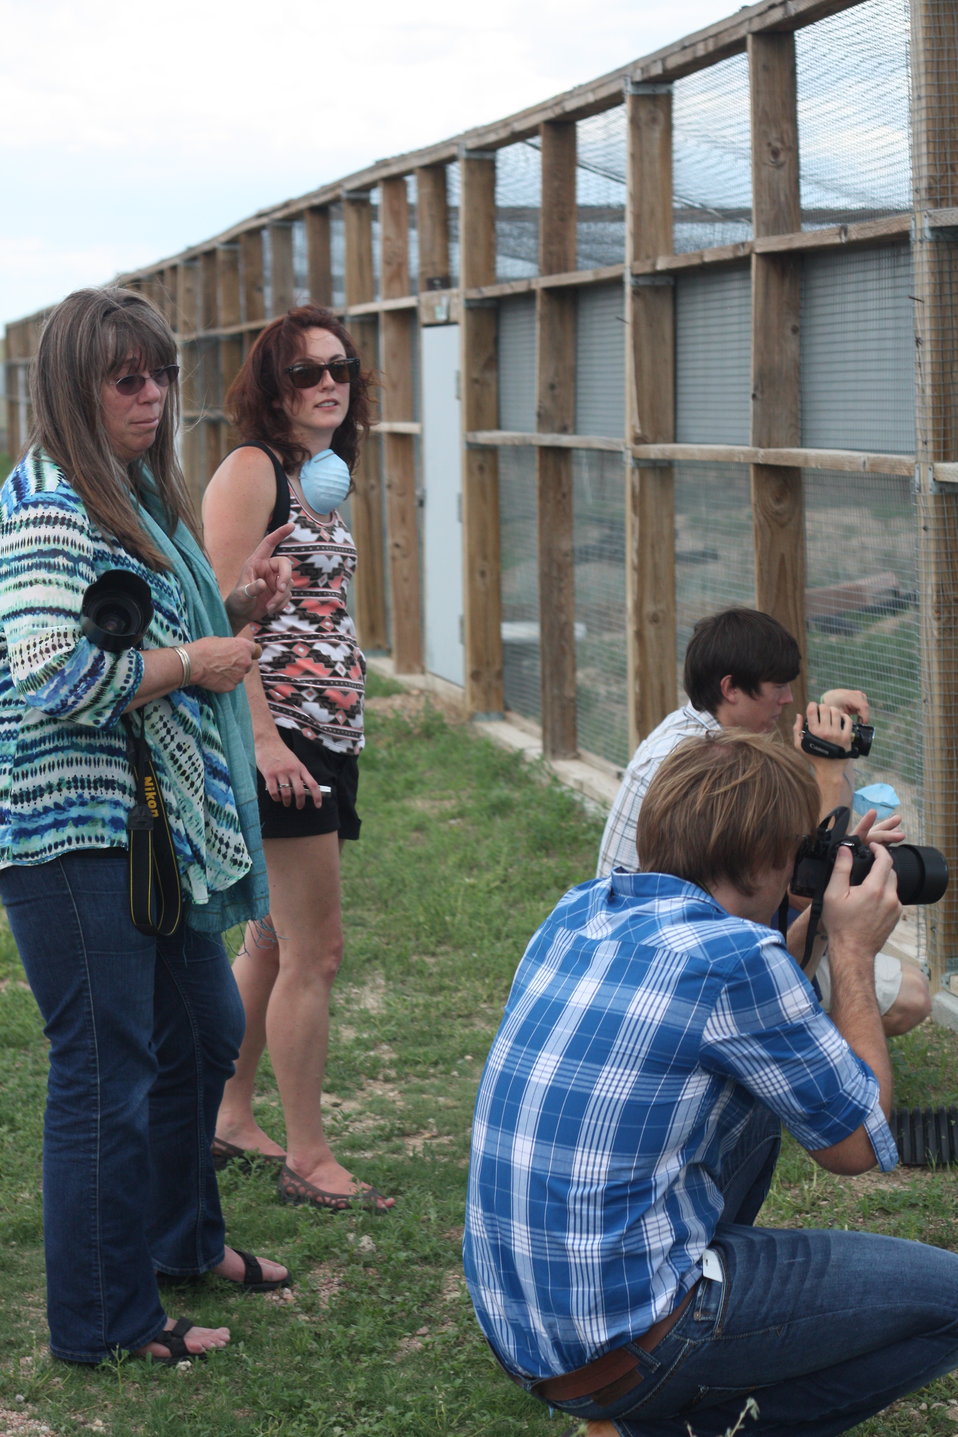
Interns visit the NBFFCC

In the summer of 2012, USFWS Region 6 interns visited the National Black-footed Ferret Conservation Center (NBFFCC) in Colorado to learn how the program reintroduces the endangered Black-footed ferret back into its native habitat.

In this photo, Kimberly Tamkun shows the outdoor preconditioning pens to Ryan and the interns.